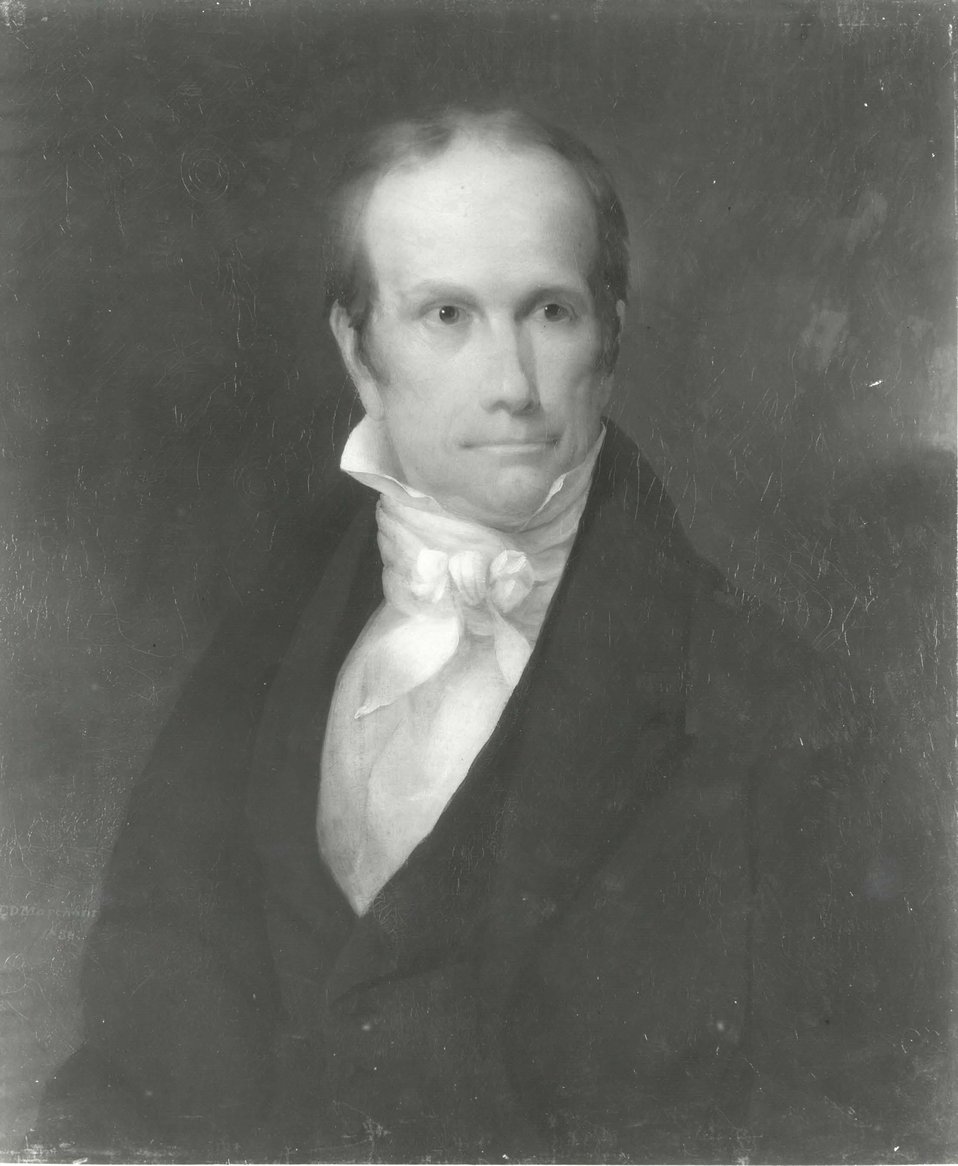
Henry Clay, U.S. Secretary of State, March 7, 1825 to March 3, 1829